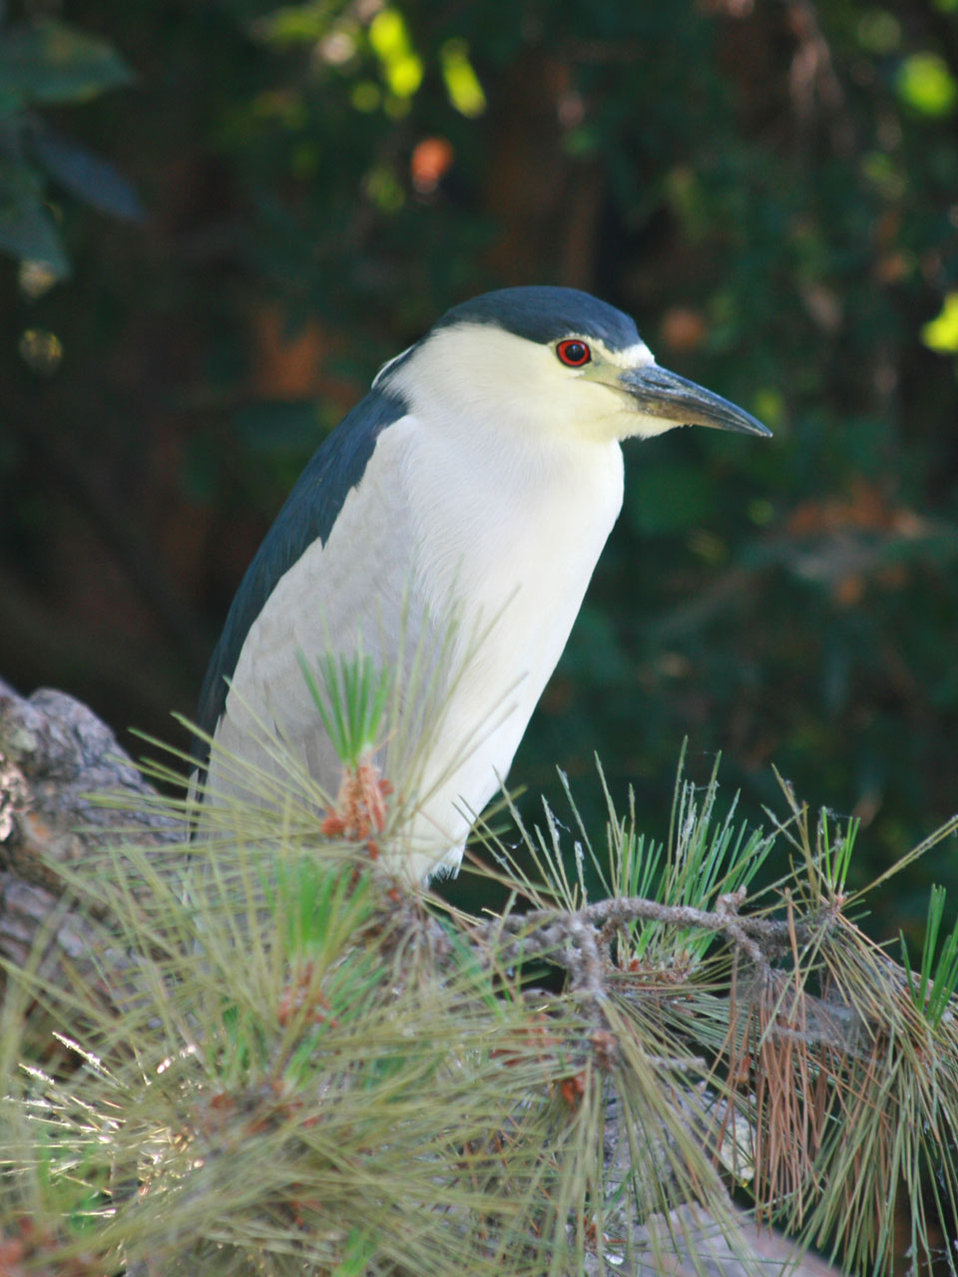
Night heron

Shot at disneyland outside the entrance to frontierland.